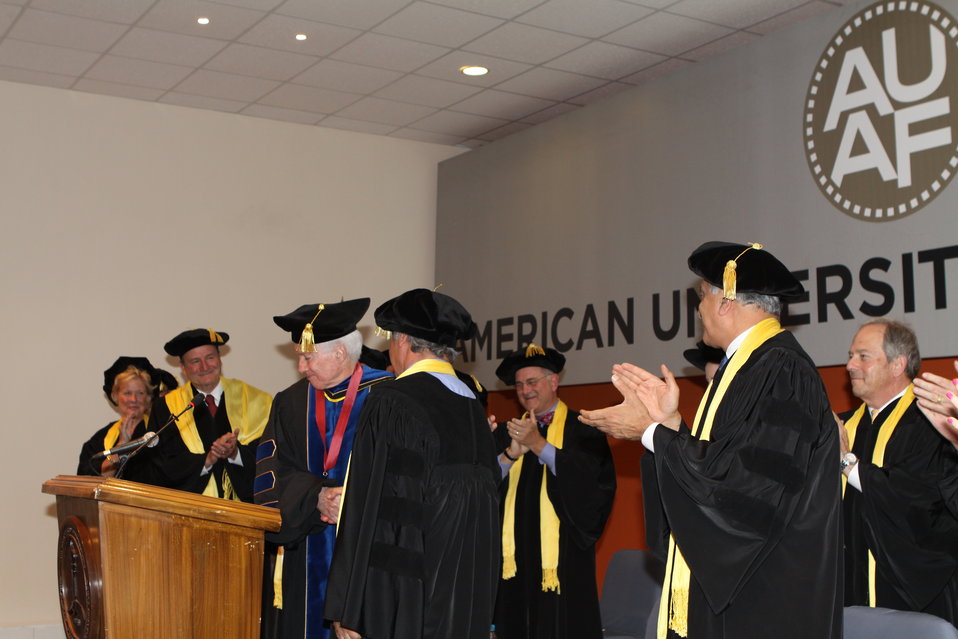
100526 AUAF Graduation 232